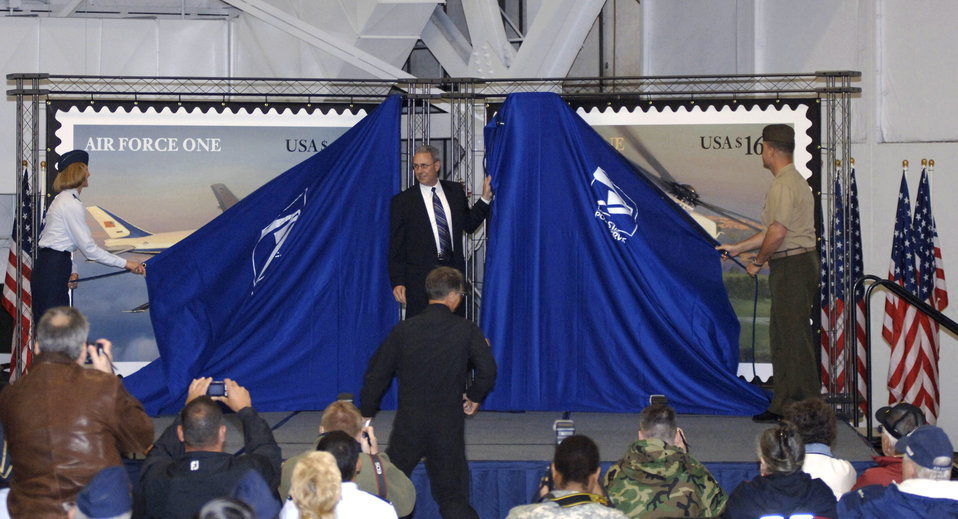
Stamp of approval

David Failor, executive director of Stamp Services for the U.S. Postal Service, assists Col. Margaret Woodward, 89th Airlift Wing commander, and Col. Andrew O'Donnell Jr., commanding officer of Marine Helicopter Squadron One, in unveiling new U.S. Air Force and U.S. Marine postal stamps during the Joint Service Open House at Andrews Air Force Base, Md. The stamps will be available June 13 at all post offices across the U.S.